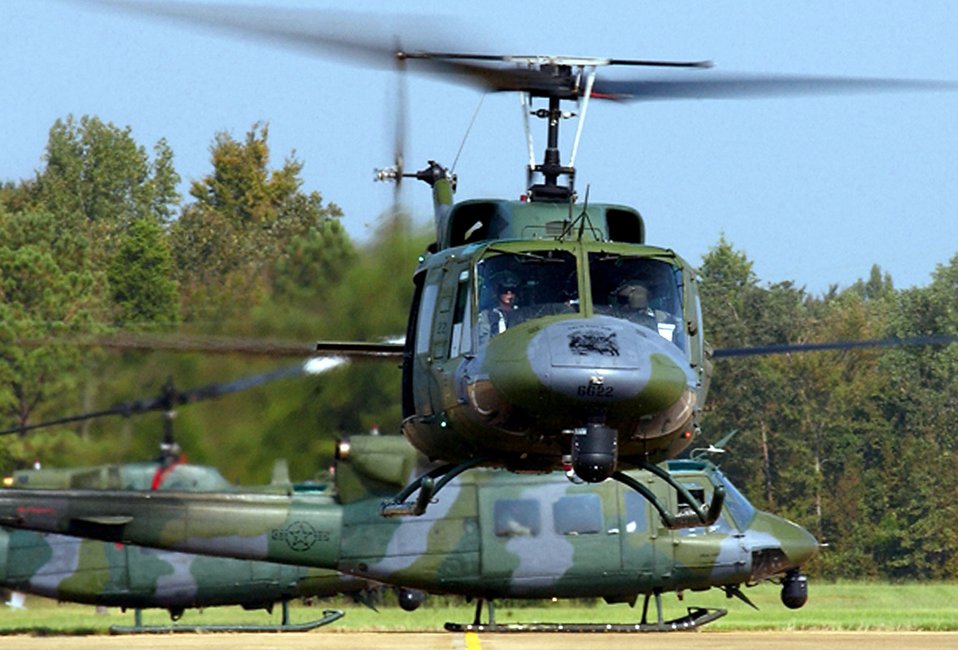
AFSPC helicopter deployment aids Hurricane Katrina relief efforts

COLUMBUS AIR FORCE BASE, Miss. -- Several Air Force Space Command UH-1N Huey helicopters and crews have deployed here supporting Joint Task Force-Katrina. Crews, as part of the 620th Air Expeditionary Squadron, provide search, recovery and relief for displaced persons.